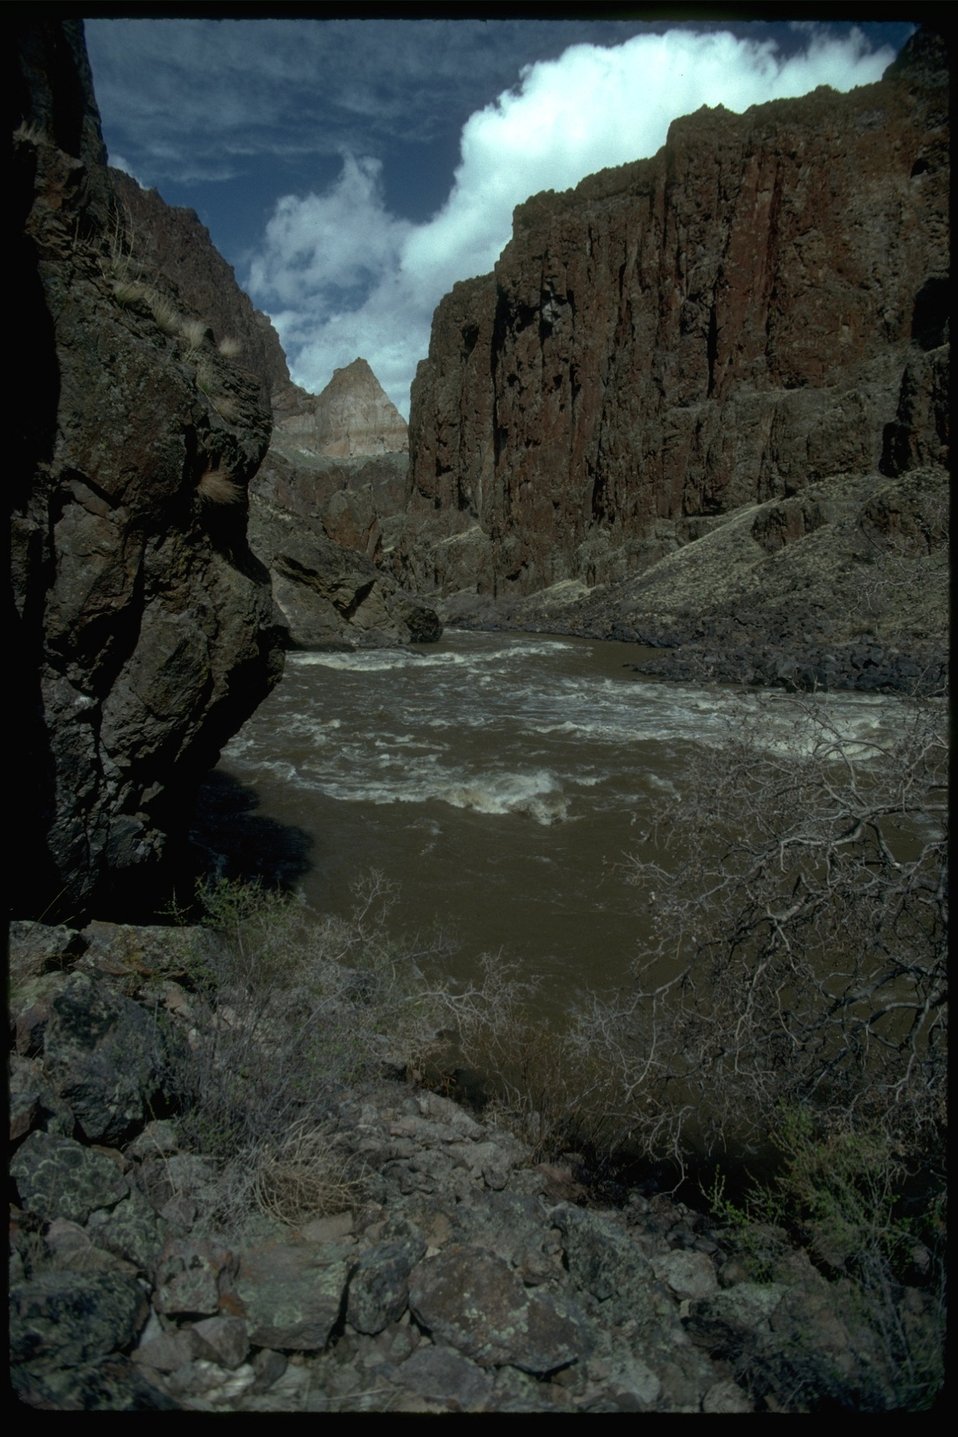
The Montgomery Rapids of the Owyhee River. OR 3-110